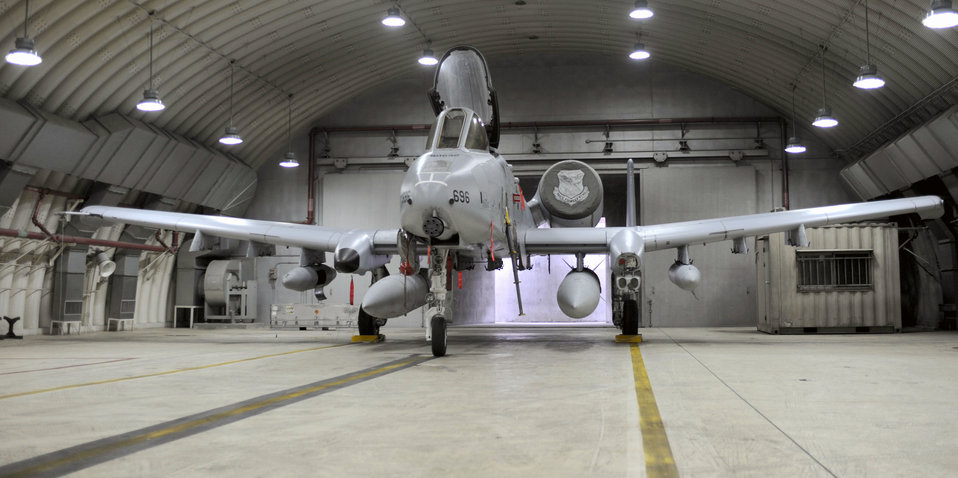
Transition to A-10C complete at Osan AB

The first three of five A-10Cs land March 3, 2010, at Osan Air Base, South Korea. The arrival marks the transition to the new model.